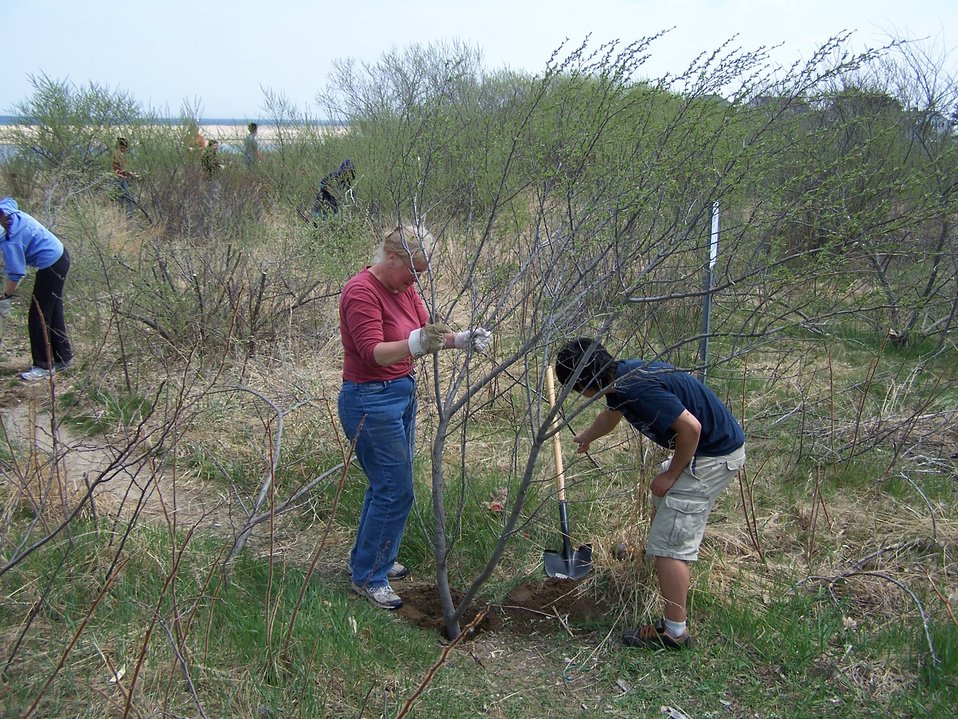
Restoring homes for New England cottontails

Volunteers and staff remove invasive buckthorn in at Libby Field in the Spurwink River Division of Rachel Carson National Wildlife Refuge to help restore habitat for New England cottontail.